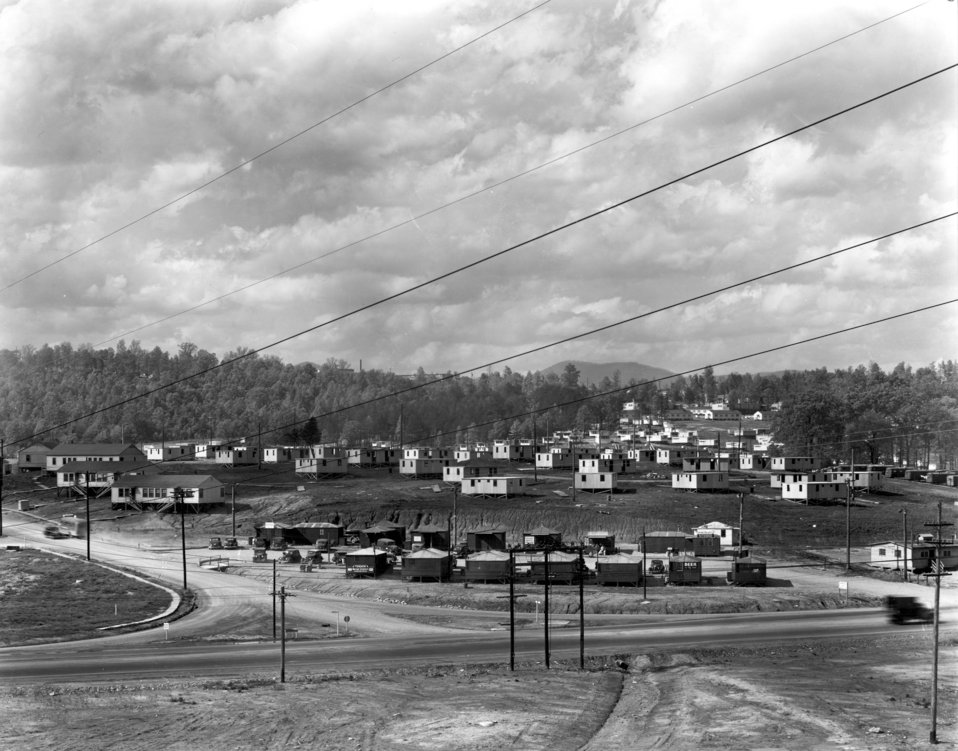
Illinois Avenue and Oak Ridge Turnpike Shopping Area Oak Ridge

med47 DOE photo by Ed Westcott Oak Ridge Tennessee 1944